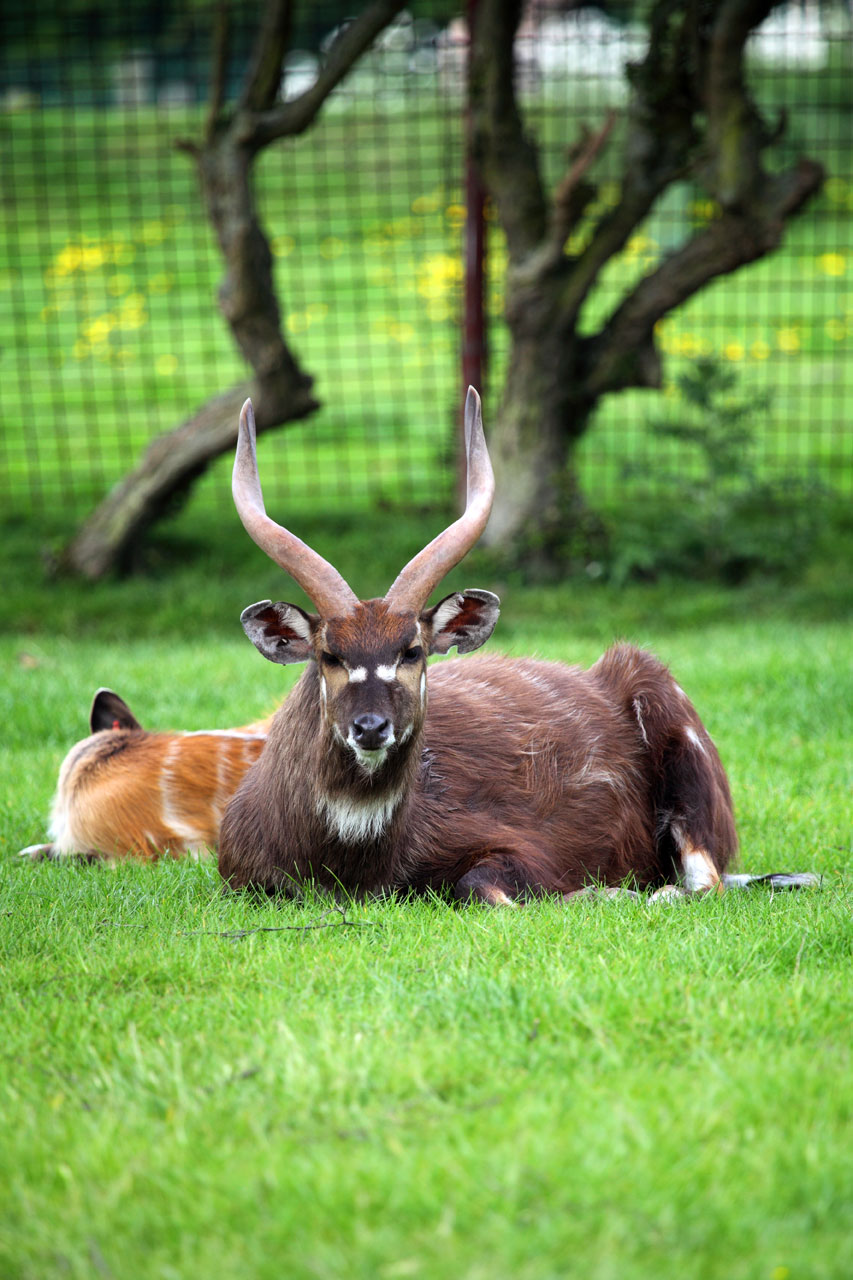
Male antelope

Male and female sitatunga antelope.